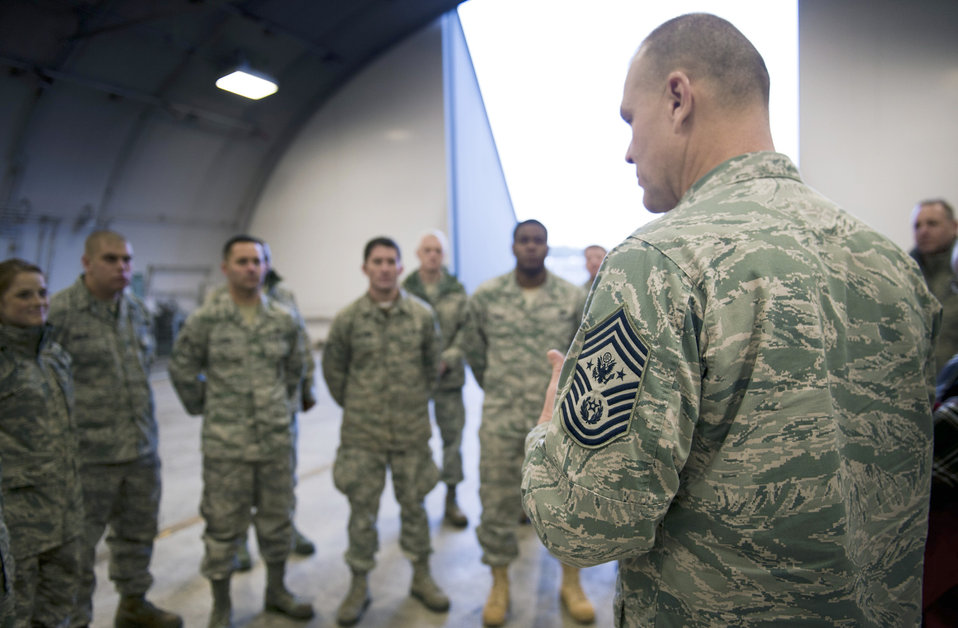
CMSAF visits Misawa

Chief Master Sgt. of the Air Force James A. Roy talks to the Airmen of the 35th Aircraft Maintenance Squadron Dec. 28, 2010, at Misawa Air Base, Japan. Chief Roy answered questions about challenges faced by Airmen in today's Air Force.